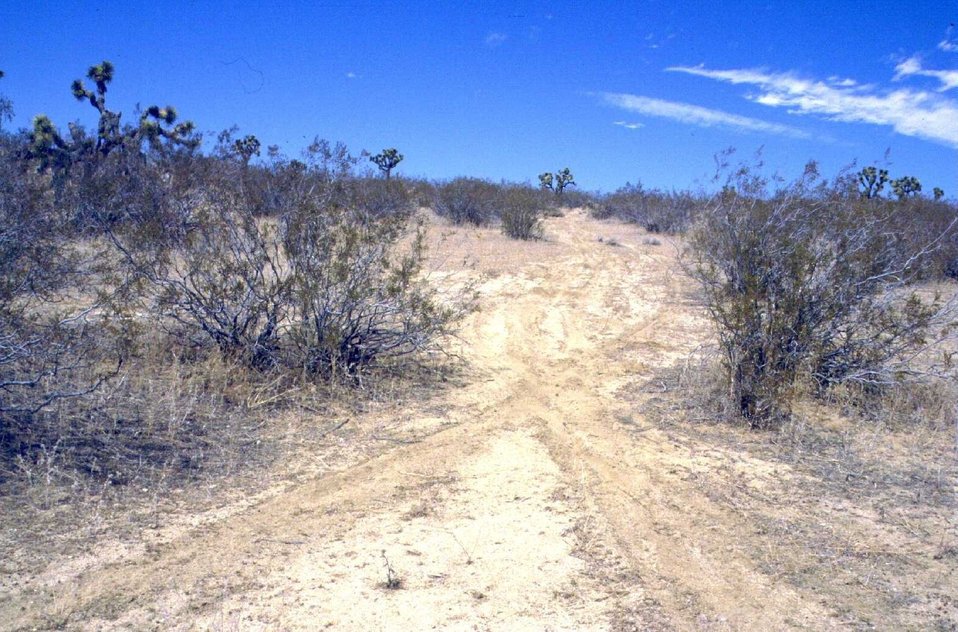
? Fresh multiple vehicle tracks running off the designated route.